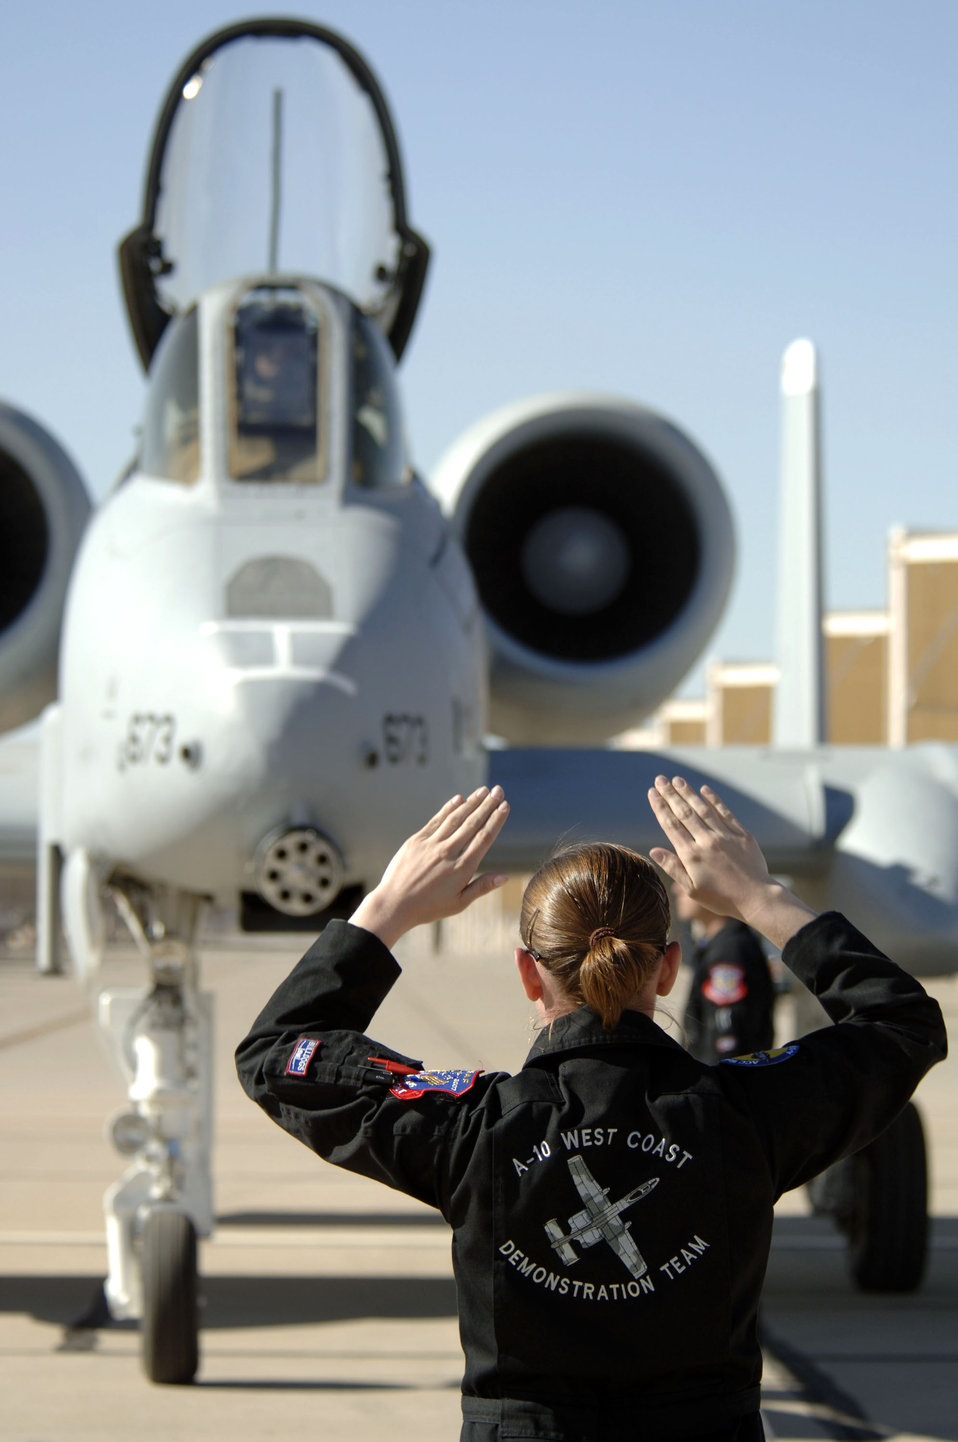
Demonstration team excels at Heritage Conference

Staff Sgt. Jennifer Eriksen marshals an A-10 Thunderbolt II after an aerial demonstration flight March 3 at the 2007 Heritage Conference at Davis-Monthan Air Force Base, Ariz. The conference provides an opportunity for ACC demonstration pilots to train together with modern and historic military aircraft in preparation for the upcoming air-show season. The West Coast team is assigned to the 355th Wing at Davis-Monthan AFB.